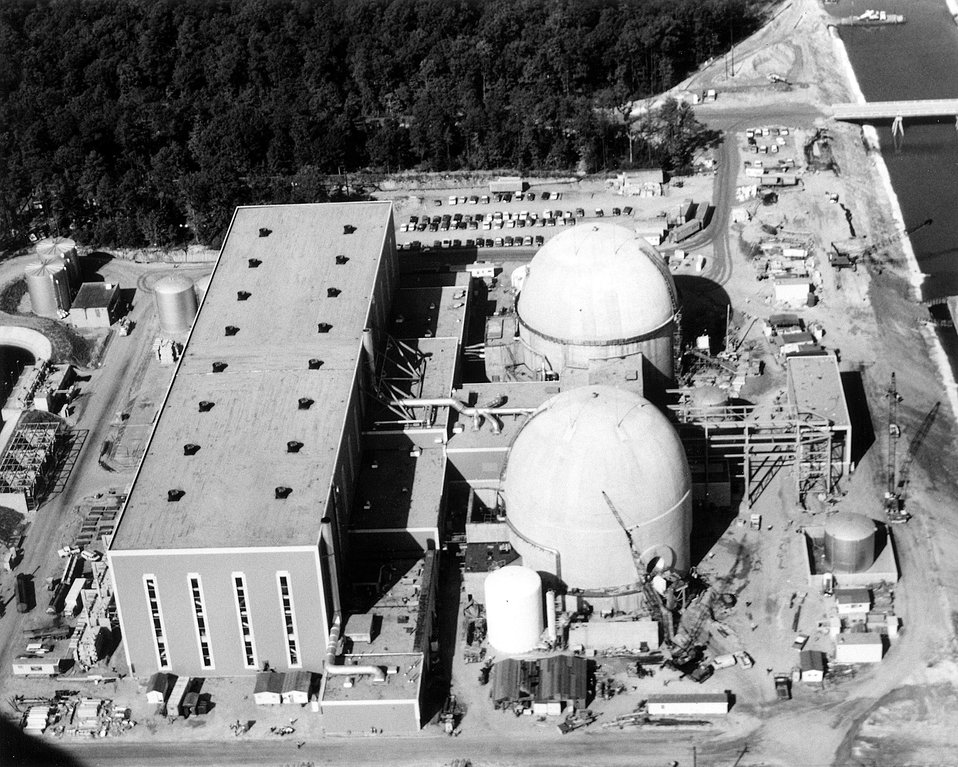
View of Virginia Electric and Power Company's Surry Power Station at Surry, Virginia. Each of the two nuclear generating units is designed for produce 788,000 electrical kilowatts. Circa 1972.